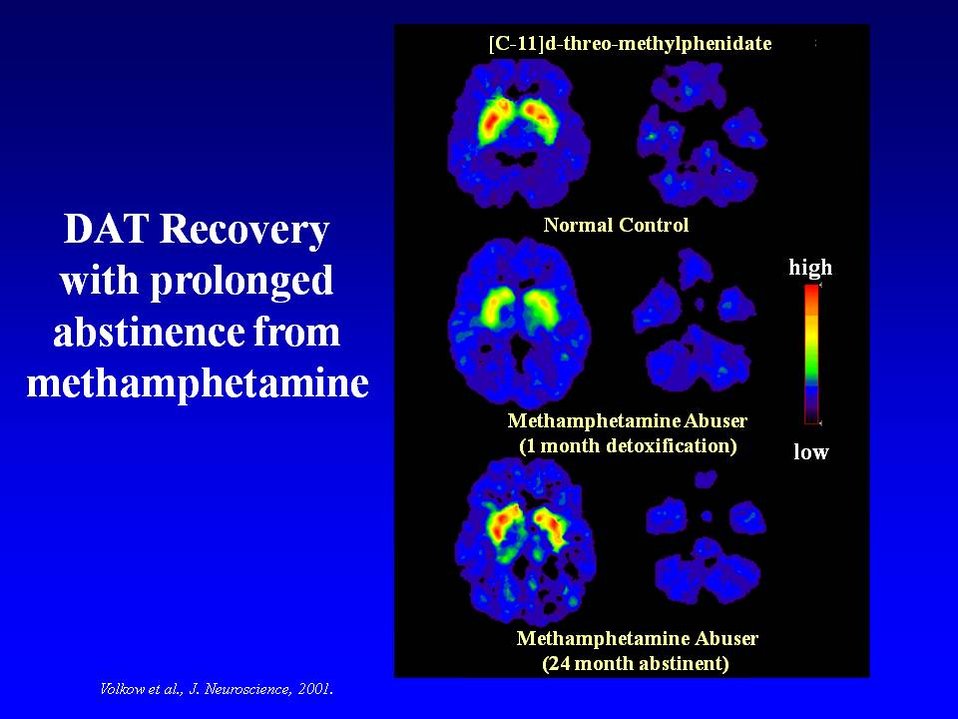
DAT recovery

Images of dopamine transporter (DAT) binding in three brains: (1) a healthy control (top); (2) a methamphetamine abuser one month after discontinuing drug abuse (middle); and (3) a methamphetamine abuser after 14 months of abstinence (bottom).